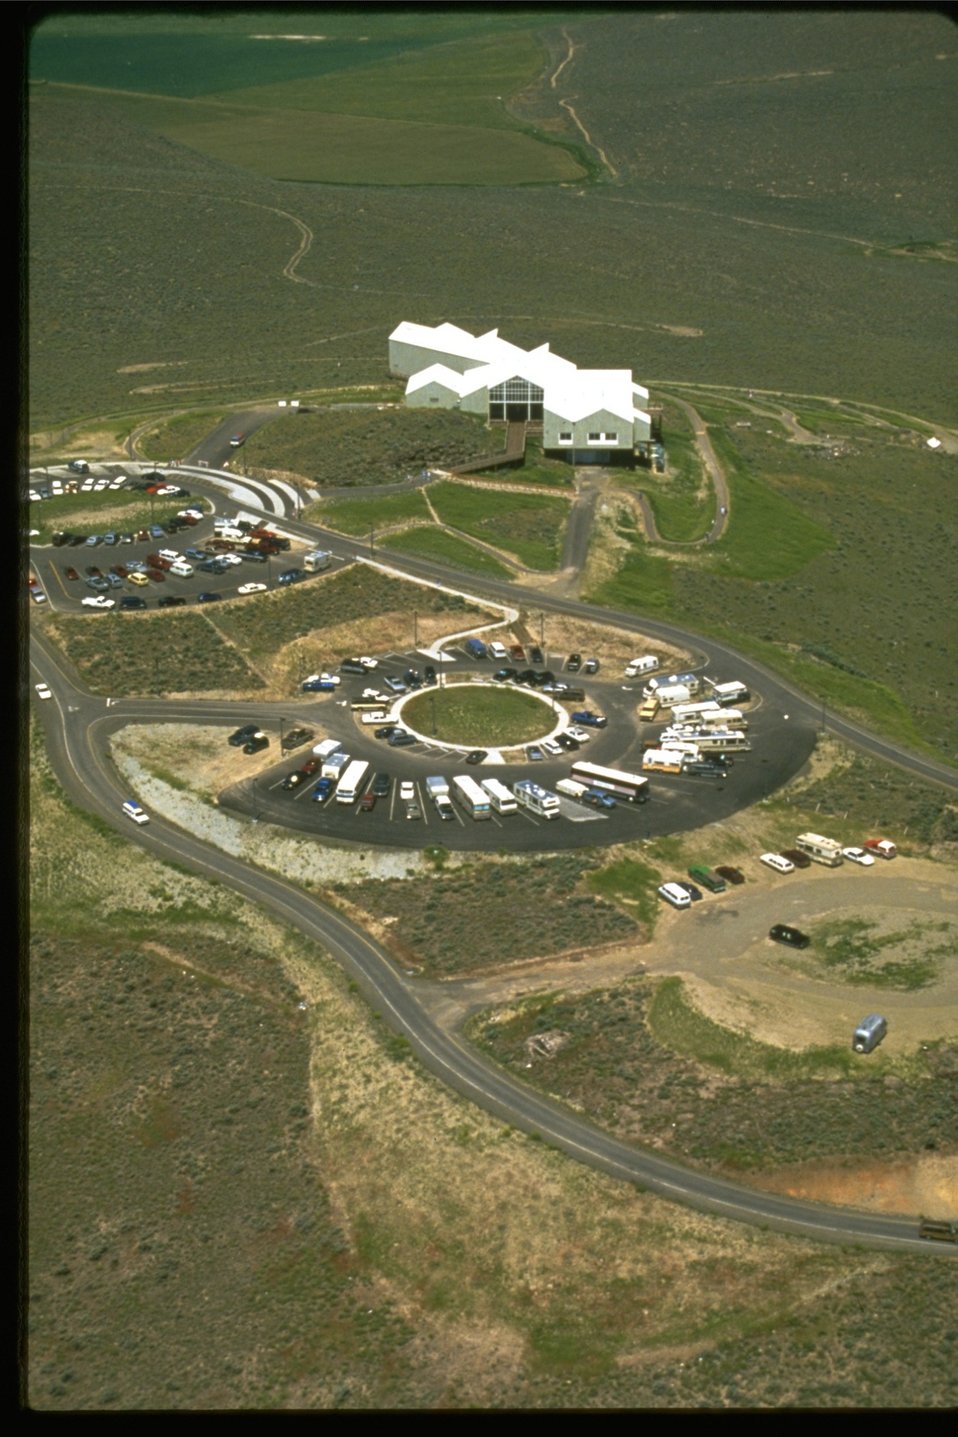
Aerial view of the National Historic Oregon Trail Interpretive Center.